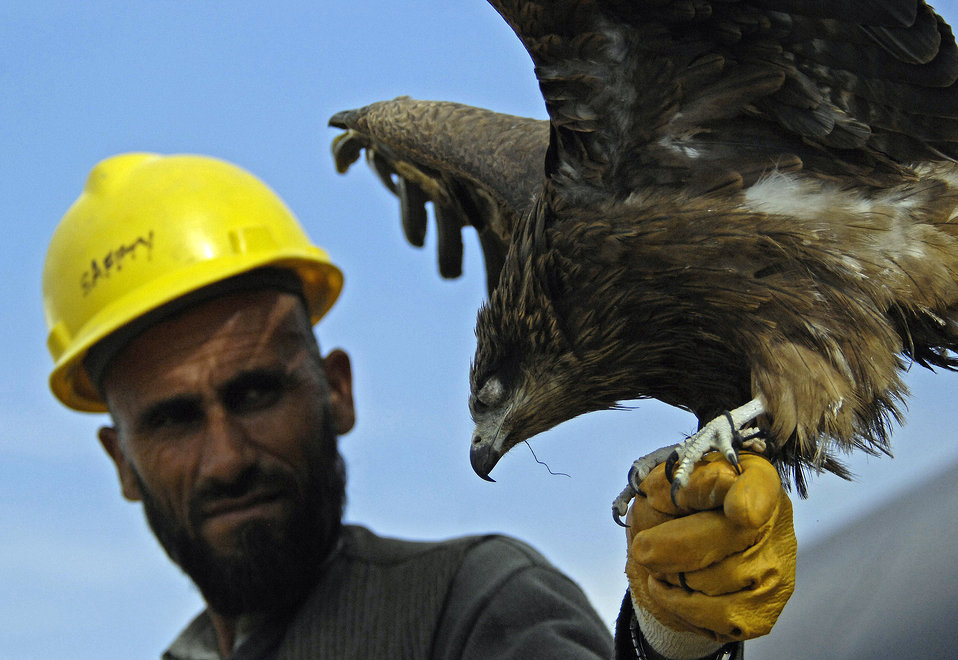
Safety experts spearhead efforts to minimize bird strikes

An Afghan falconer holds one of his falcons March 29 at Bagram Airfield, Afghanistan. The 455th Air Expeditionary Wing safety office hired three local falconers to help clear out areas near the flightline that were swarmed with thousands of birds. After a week of work, the falconers had caught or killed more than 250 birds surrounding the flightline and have apparently scared off most of the remaining birds over the past three weeks.